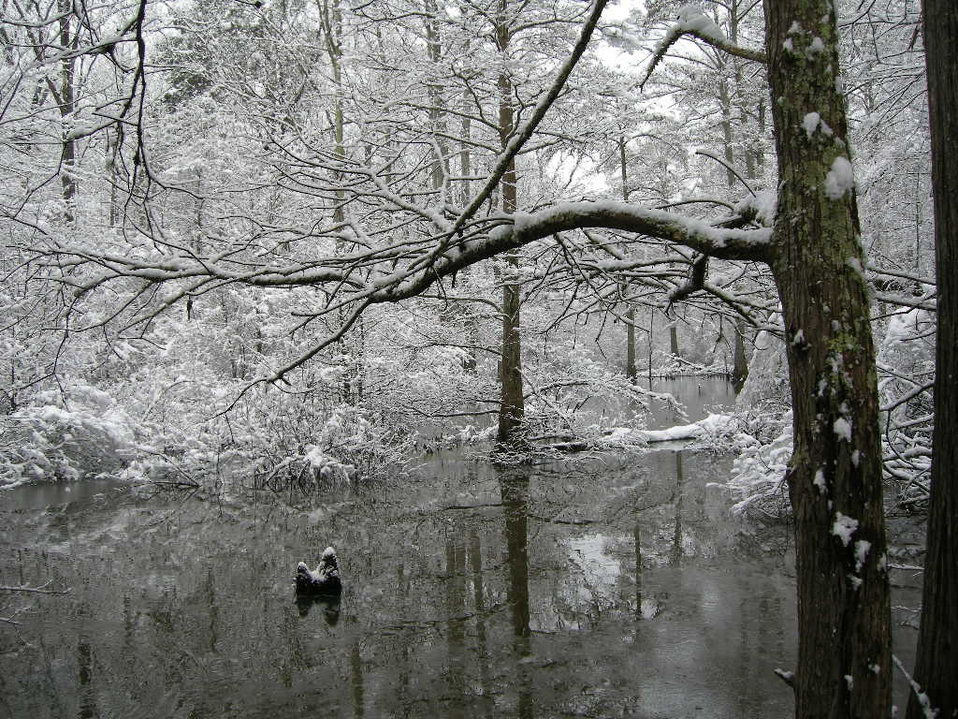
snow in the bottomlands

Little River National Wildlife Refuge, OK